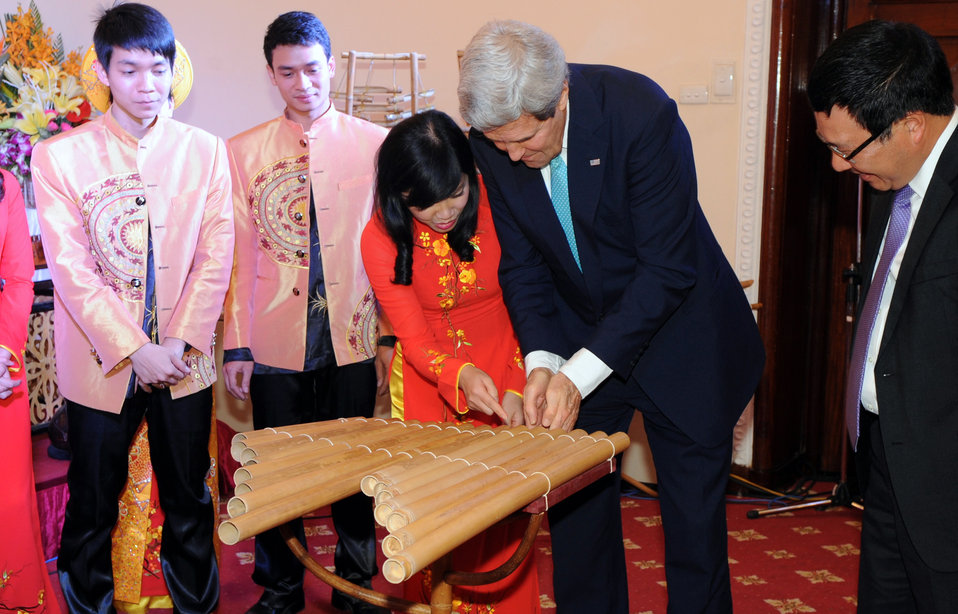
Secretary Kerry Receives Instruction on Playing a Vietnamese Bamboo Instrument

A musician explains to U.S. Secretary of State John Kerry how to play a klong put, a set of bamboo tubes that resonate by clapping a pair of hands, after a performance at a dinner in the Secretary's honor in Hanoi, Vietnam, on December 16, 2013.